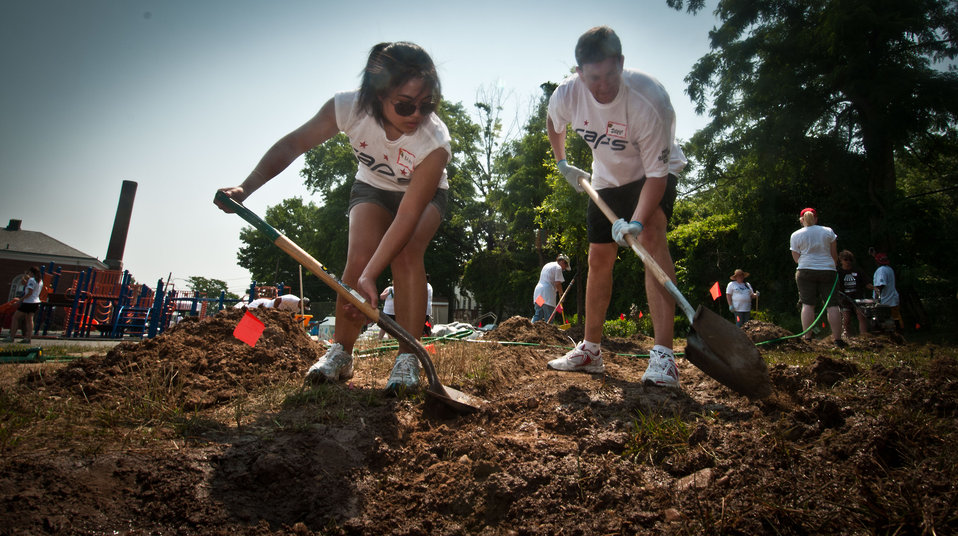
Washington Capitals “Caps” volunteers used teamwork to complete several projects during the first day of construction of a People’s Garden being constructed at the William B. Powell Elementary School, in Washington, DC, on Thursday, June 9, 2011. Volunteers from U.S. Department of Agriculture People’s Garden Executive Master Gardener program and Washington Capitals hockey organization, along with defenseman Jeff Schultz, and mascot Slapshot transformed a grassy corner of the school playground into a habitat garden and outdoor learning area. Executive Master Gardeners led the volunteer project teams. The Washington Capitals donated new tools; tool shed; garden materials; lunch; most of the volunteers and more. The completed projects included a walking path; tiling of garden plots; planting a bird habitat garden, pollinator garden and native grasses; caterpillar and butterfly plaques; hummingbird and bat house, and tool shed. The garden will later include a picnic area, outdoor classroom, hummingbird garden, Monarch watch garden, native bee garden, and birdbath. USDA challenges its employees to establish People's Gardens at USDA facilities worldwide or on this case, help communities create gardens. People's Gardens vary in size and type, but all have a common purpose - to help the community and the environment.